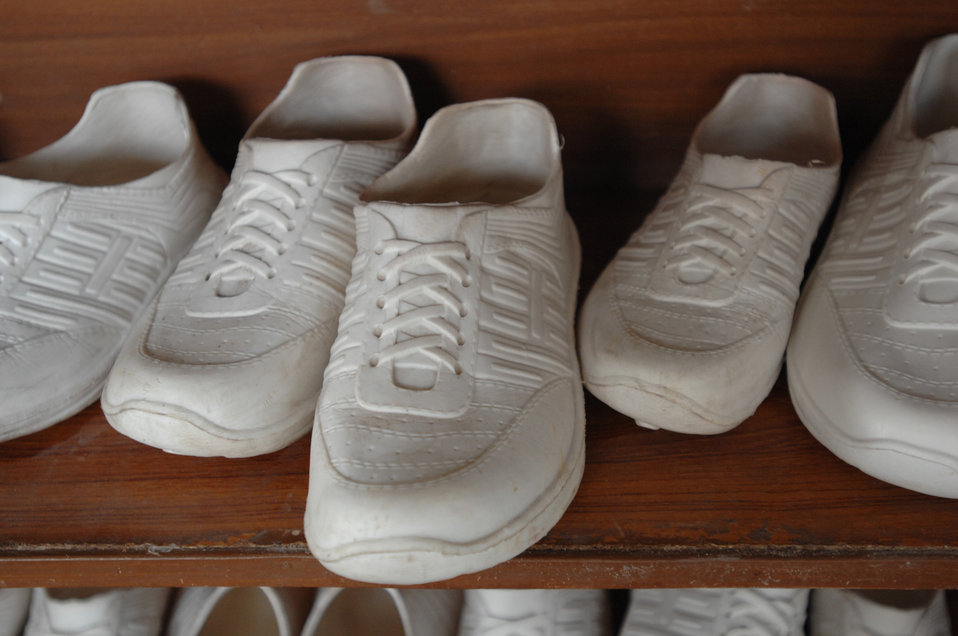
110209sv Shah207

Shoe coverings at the Surkh Rod vegetable packing facility in Nangarhar province on Wednesday, February 9, 2011. (S.K. Vemmer/Department of State)